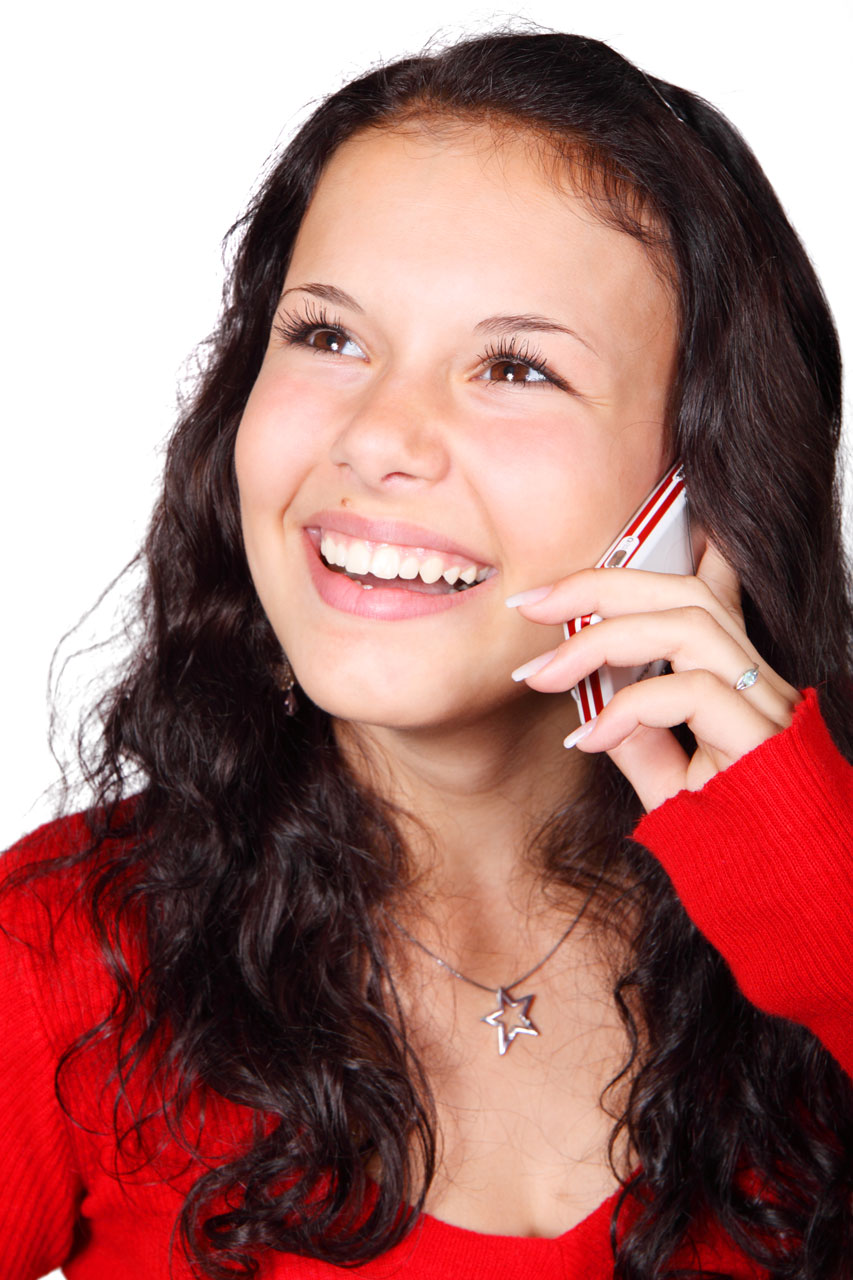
Talking on mobile phone

Young woman on her cellphone.